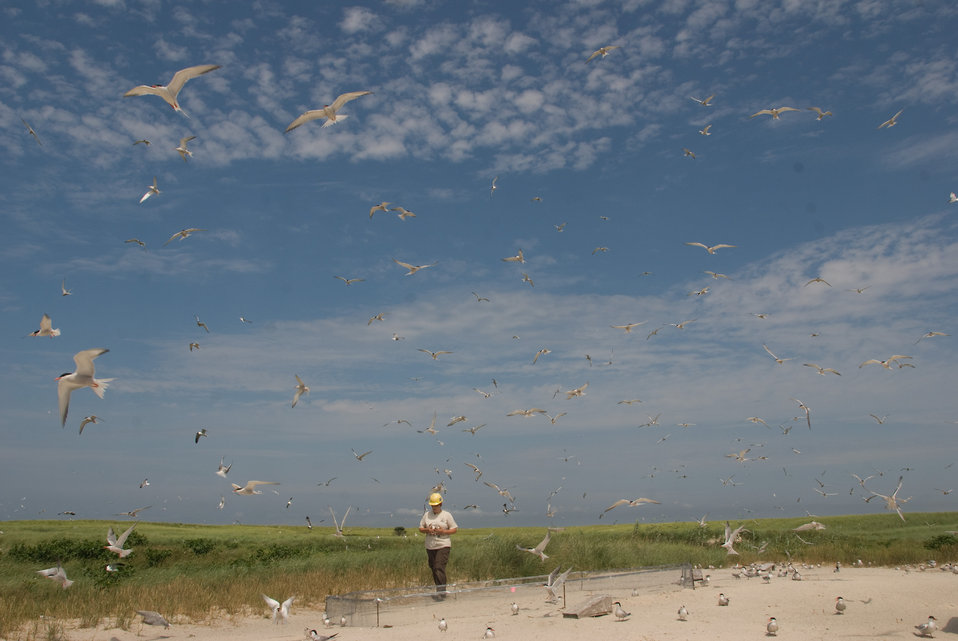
Tern colony at Monomoy National Wildlife Refuge in Massachusetts.